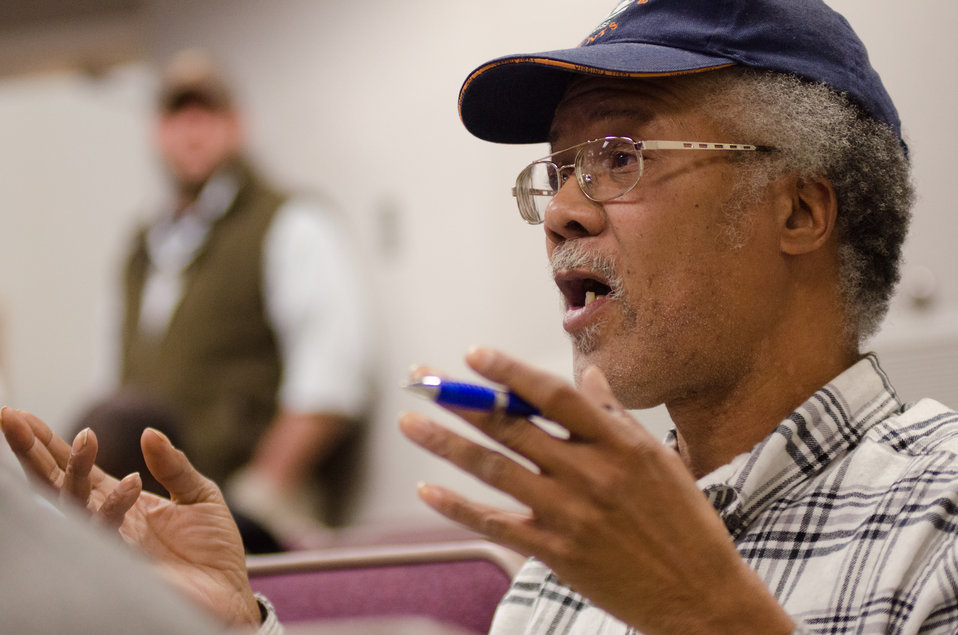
Farmers listened, questioned, took notes and gained a better understanding of resources available to them, at the “Virginia State University (VSU), U.S. Department of Agriculture (USDA) and Virginia Farmers Working Together” outreach workshop in the VSU, L. Douglas Wilder building on Thursday, March 7, 2013, in Petersburg, VA. Farmers shared and learned new ways to produce more and conduct better practices and planning of their family agriculture businesses.